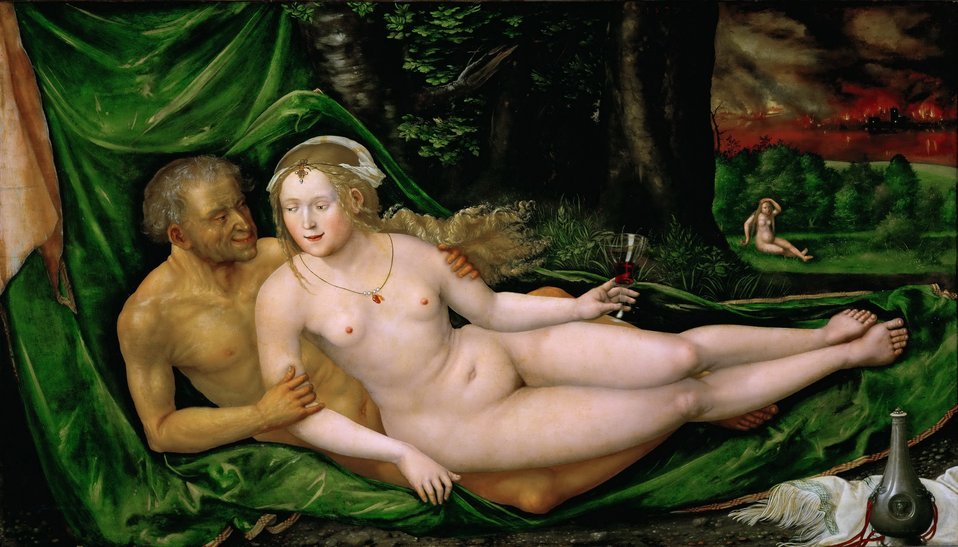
Albrecht Altdorfer 046